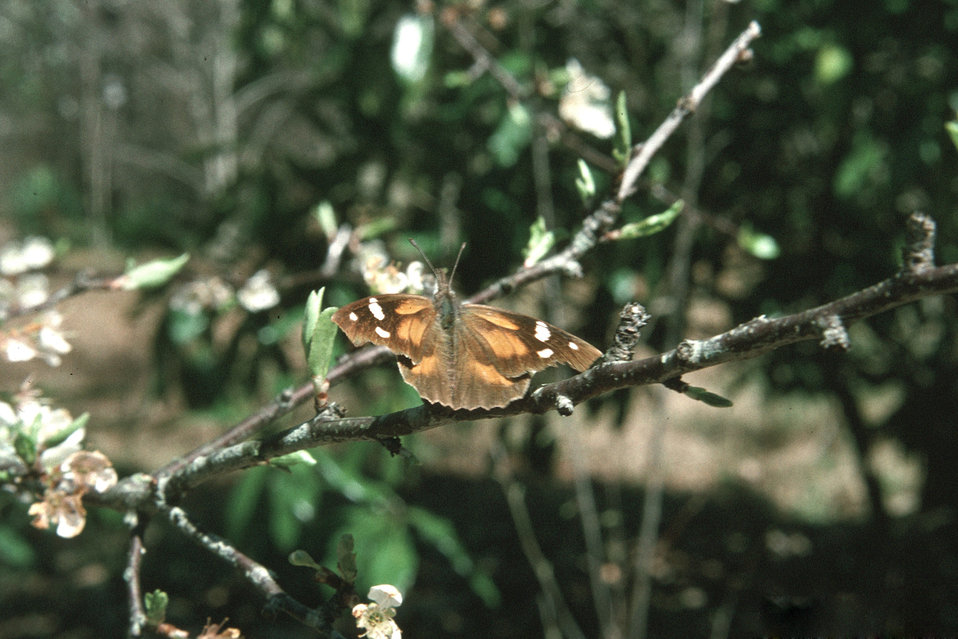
An American snout butterfly collects nectar from a flower. Butterflies are one of nature’s many pollinators for flowers and crops and are crucial in production for fruits and vegetables.